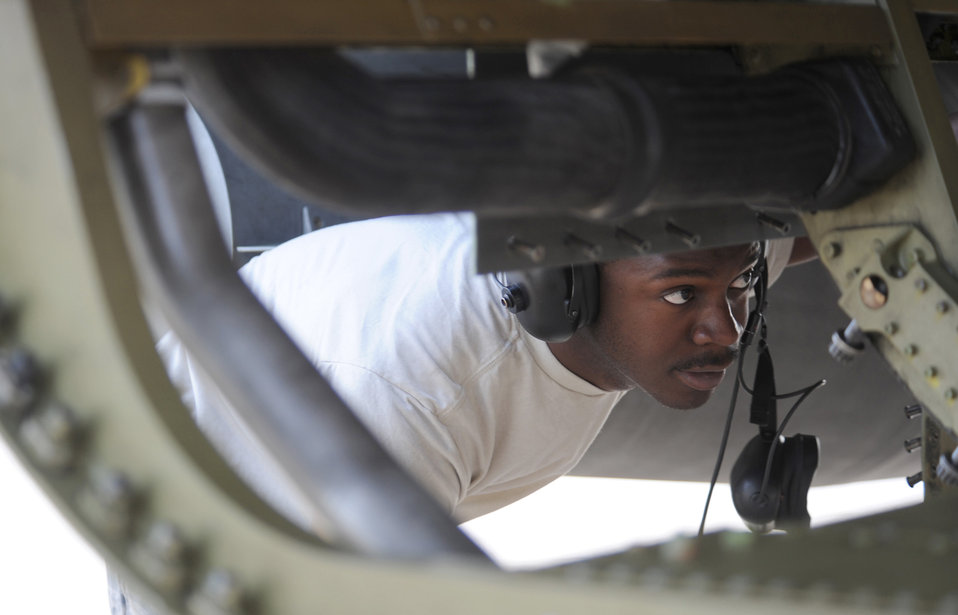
Operation Unified Protector

Staff Sgt. Kemp Roderick inspects an F-16 Fighting Falcon engine compartment March 31, 2011, at Aviano Air Base, Italy. Sergeant Roderick is assigned to the 52nd Aircraft Maintenance Squadron, which deployed from Spangdahlem Air Base, Germany, in support of Odyssey Dawn.